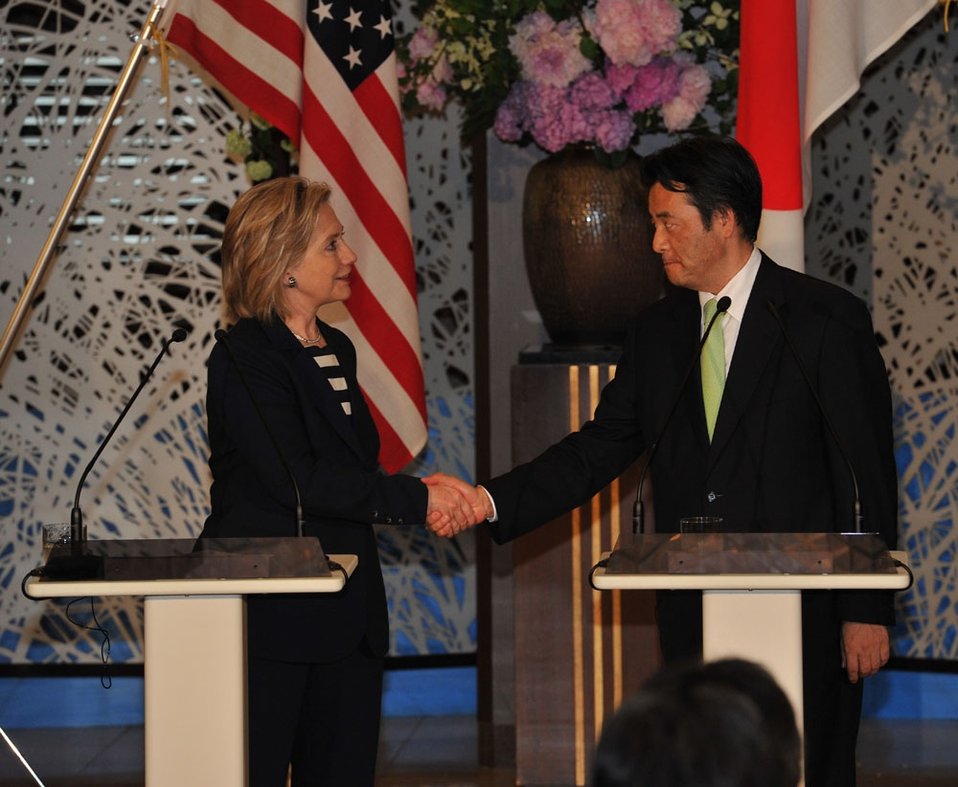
Secretary Clinton Shakes Hands With Japanese Foreign Minister Okada

U.S. Secretary of State Hillary Rodham Clinton shakes hands with Japanese Foreign Minister Katsuya Okada after their joint press availability at the Iikura House of the Foreign Ministry, Tokyo, Japan, May 21, 2010.